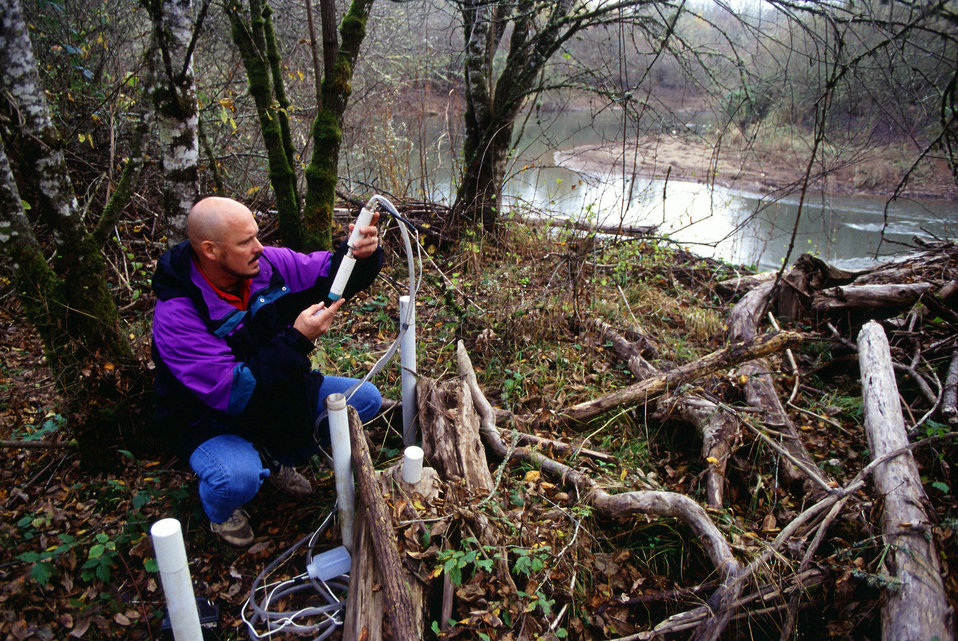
U.S. Department of Agriculture (USDA) Agricultural Research Service (ARS) plant physiologist Steve Griffith collects water samples from a monitor well inside the riparian zone near the Calapooya River to measure nitrogen runoff in the Pacific Northwest.